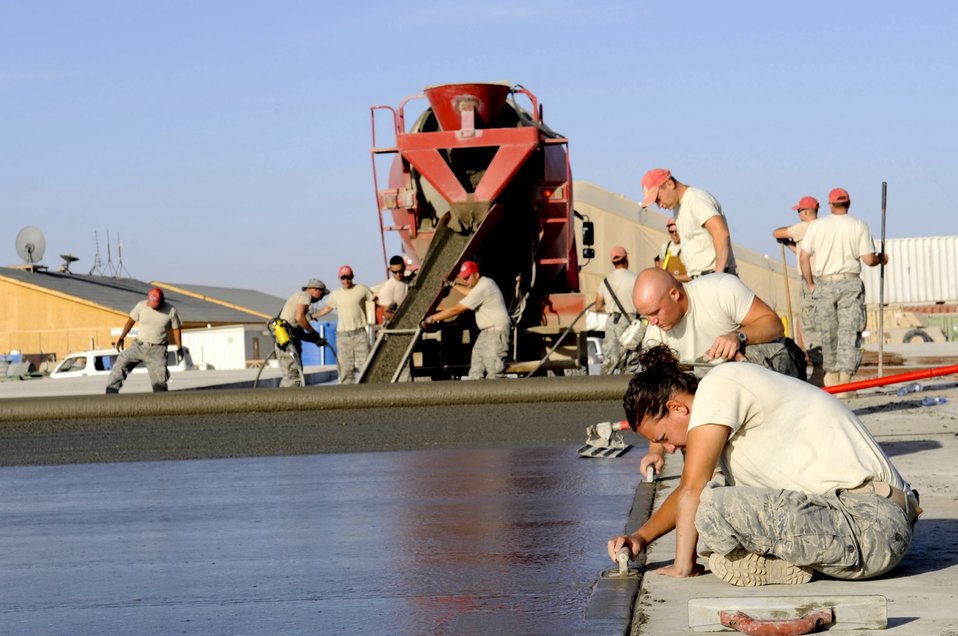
RED HORSE Airmen construct shelter pads

Members of the 809th Expeditionary RED HORSE Squadron smooth newly poured concrete slabs May 15, 2010, at Kandahar Airfield, Afghanistan.